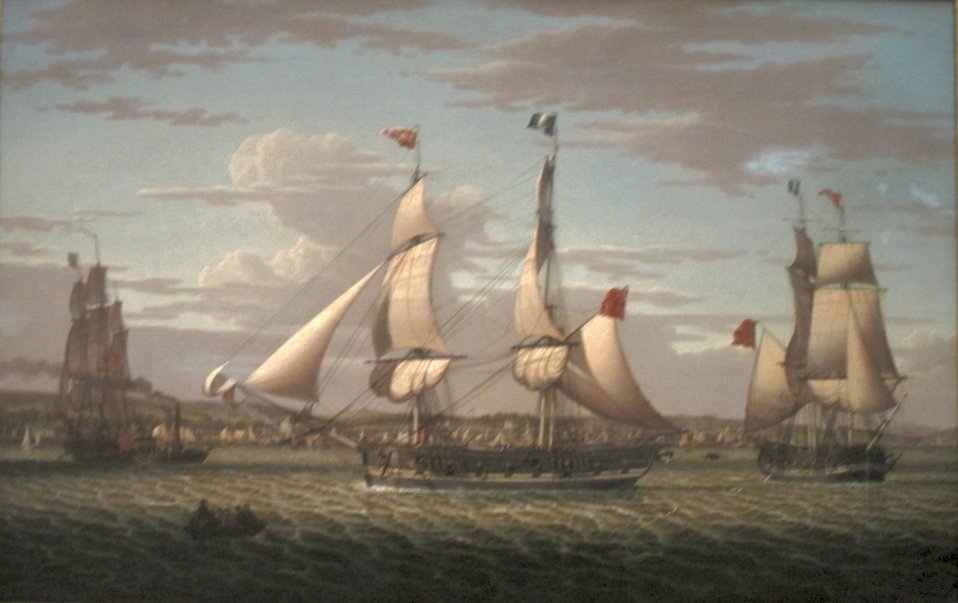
'Ships off Greenock, Scotland' by Robert Salmon, Cincinnati Art Museum